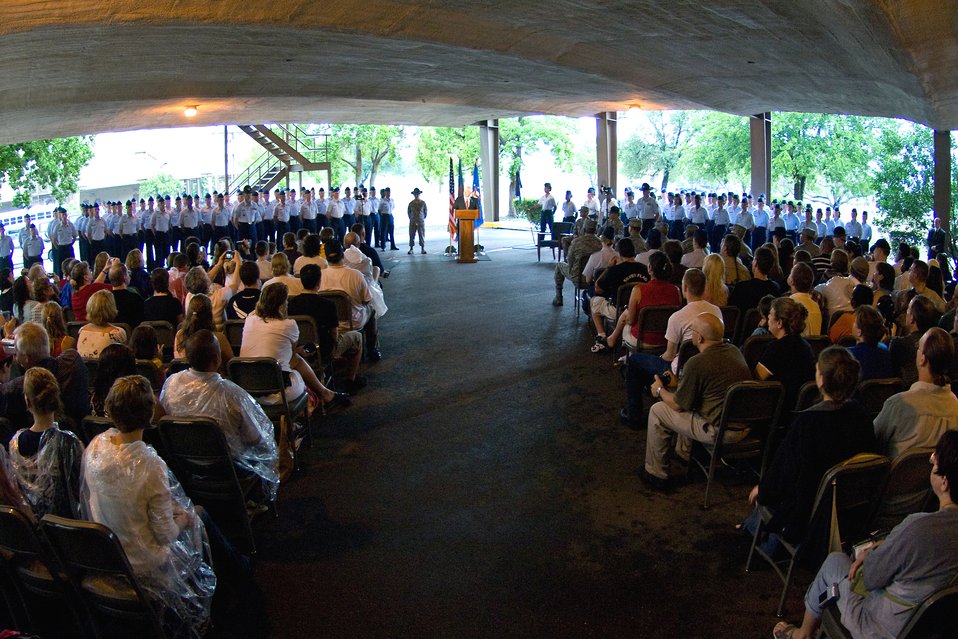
SECDEF visits Airmen, tour BMT facilities

Secretary of Defense Robert M. Gates addresses the audience during a coin ceremony for basic training graduates at Lackland Air Force Base, Texas, July 24.